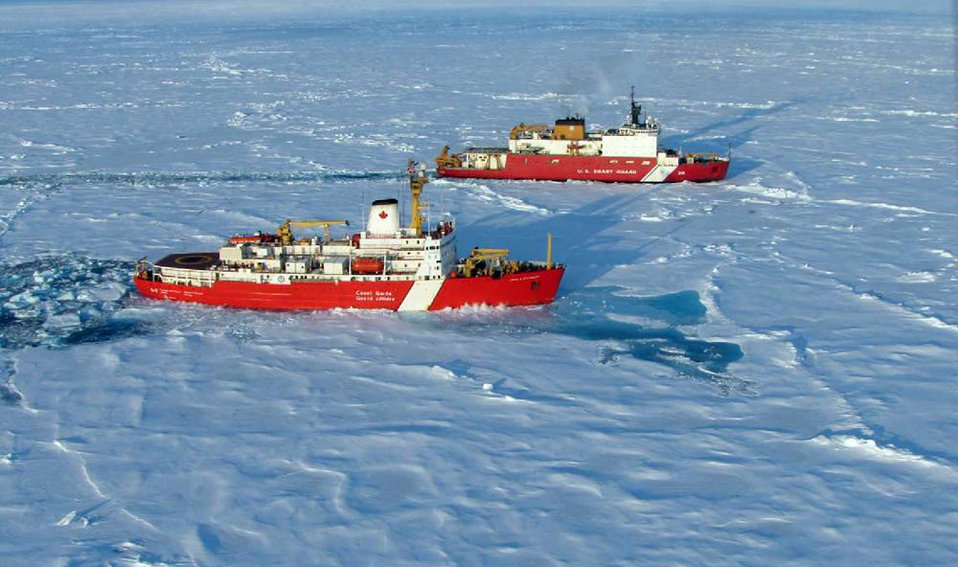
U.S.-Canada Fourth Joint Mission To Map the Continental Shelf in the Arctic Ocean

Views of the U.S.-Canada fourth joint mission to map the continental shelf in the Arctic Ocean in August and September 2011. The 2011 joint mission employed the flagship icebreaker from each country, the U.S. Coast Guard Cutter Healy and the Canadian Coast Guard Ship Louis S. St-Laurent (LSSL), with each ship performing different functions and one ship breaking ice for the other.